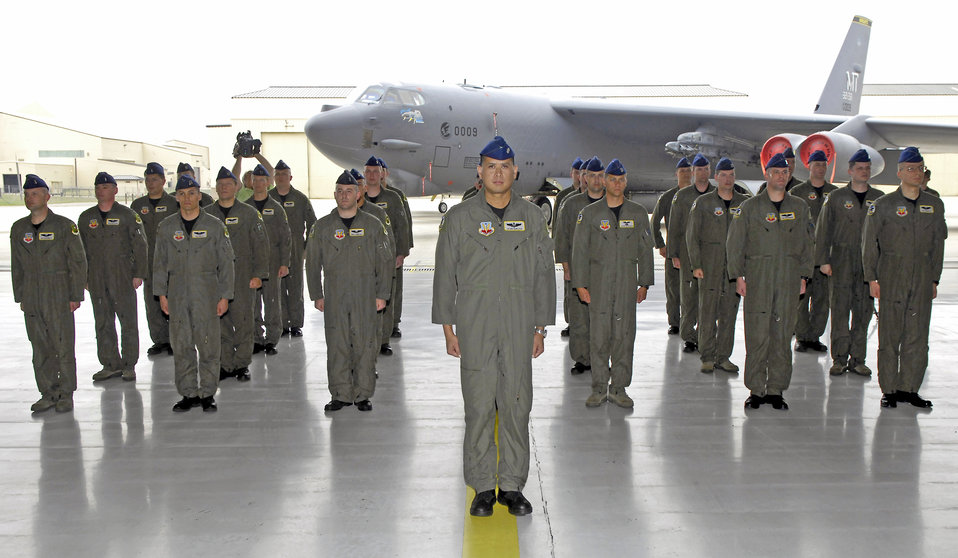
69th Bomb Squadron members being addressed during activation ceremony

69th Bomb Squadron members watch as the squadron commander addresses them for the first time during the 69th activation ceremony Sept. 3, 2009, at Minot Air Force Base, N.D. The new unit is the fourth operational B-52H Stratofortress squadron in the Air Force and joins the 23rd Bomb Squadron as the second squadron at Minot AFB.